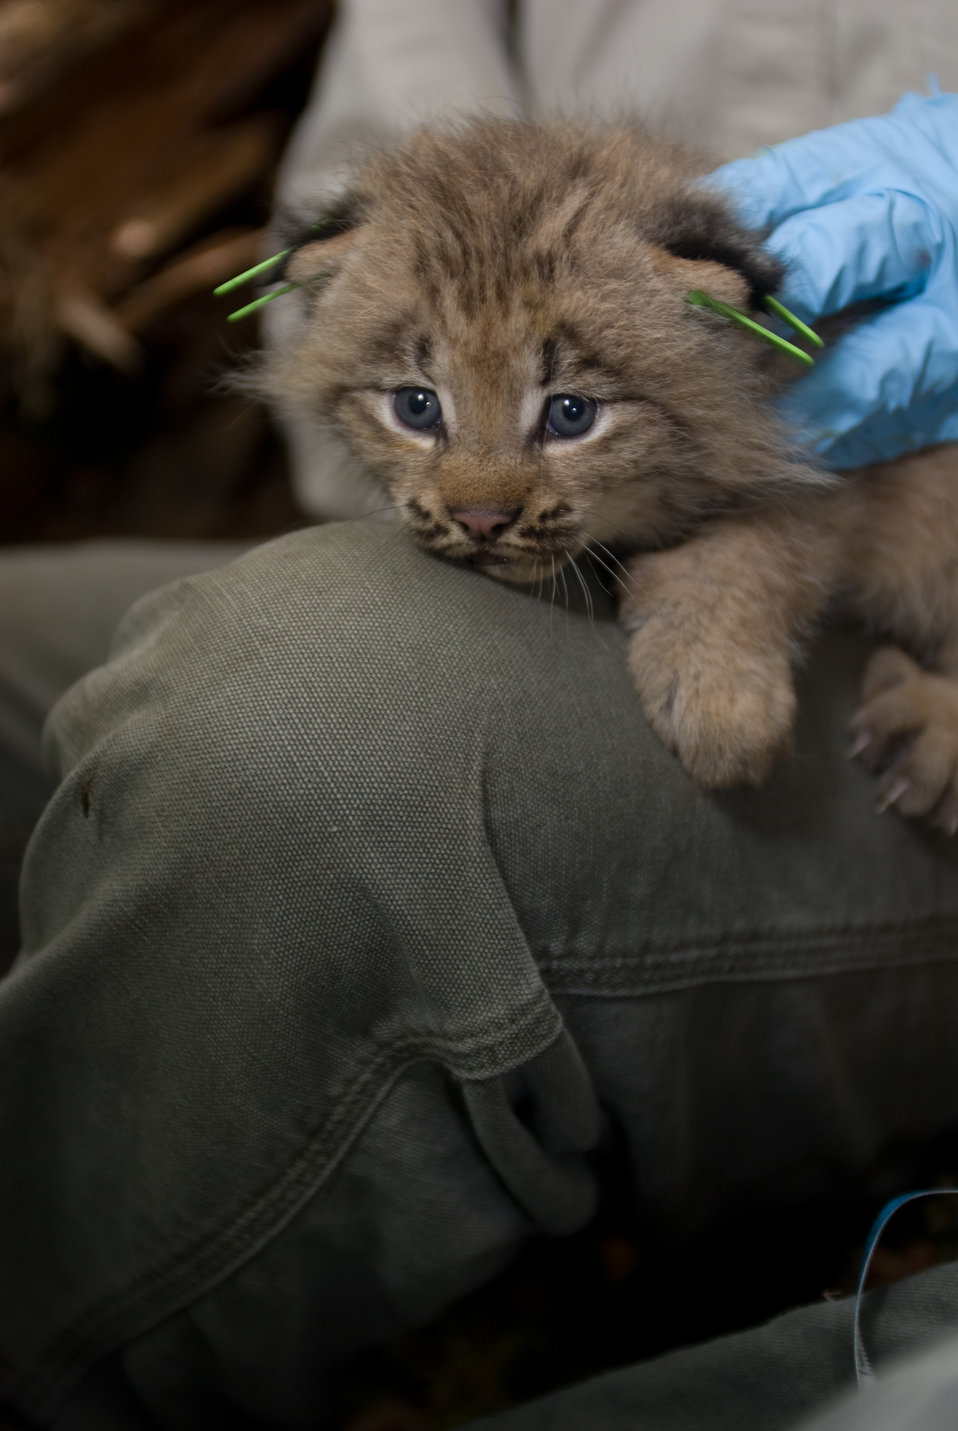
Canada Lynx kitten

Eartagged and being measured, a lynx kitten is held by a biologist.